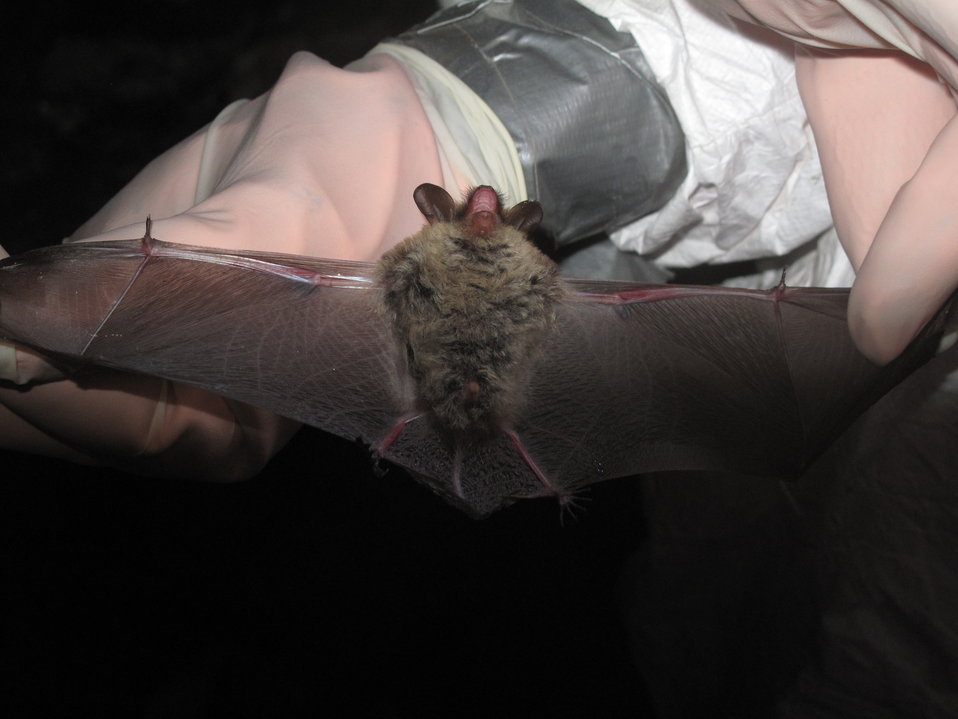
NCWRC biologist inspects bat wings